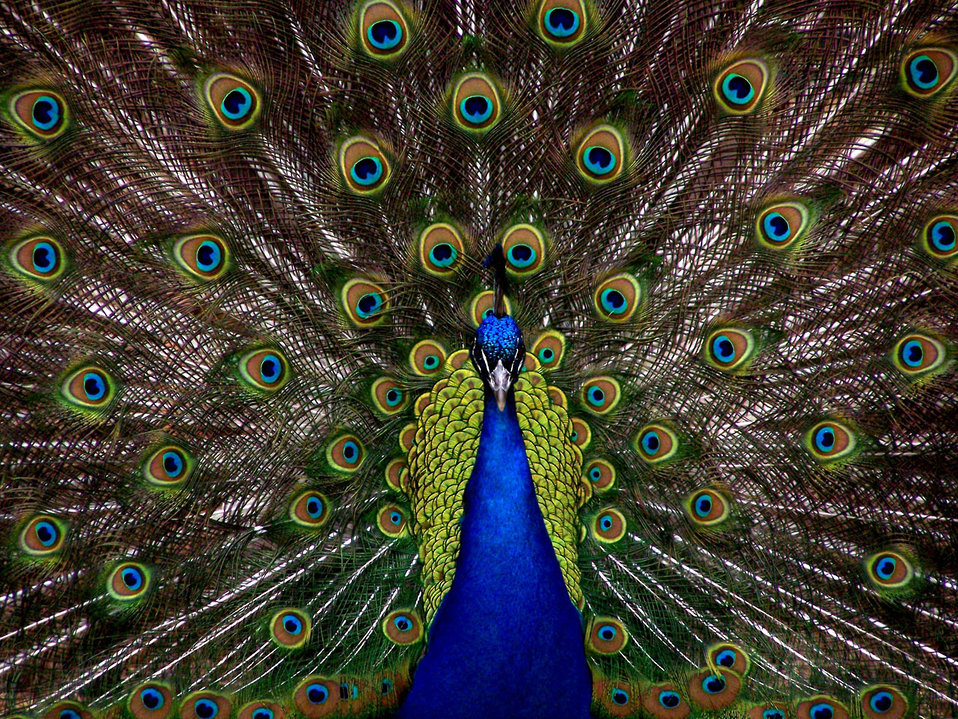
Proud

Peacock, fanning his feathers.